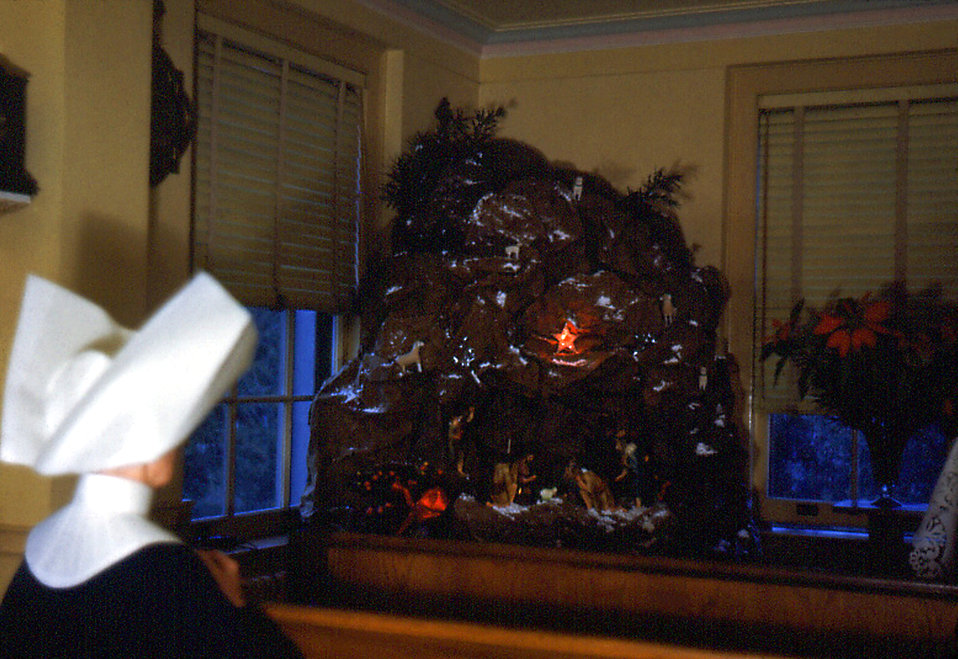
In this historic image, one of the "Sisters of Charity" was photographed as she was praying at what was known as the "Christmas Crib", on Christmas Eve. On each Christmas Eve, the entire roster of Carville, Louisiana, Leprosarium residents, including staff, and able-bodied patients attended Midnight Mass held in the Catholic Chapel. The first group of four Sisters of the order founded by St. Vincent de Paul, and officially named Daughters of Charity, arrived at Carville, April 27, 1896, with Sister Beatrice Hart in charge. The sisters volunteered their services, in order to nurse the sufferers of leprosy who'd sought help at the leprosarium.